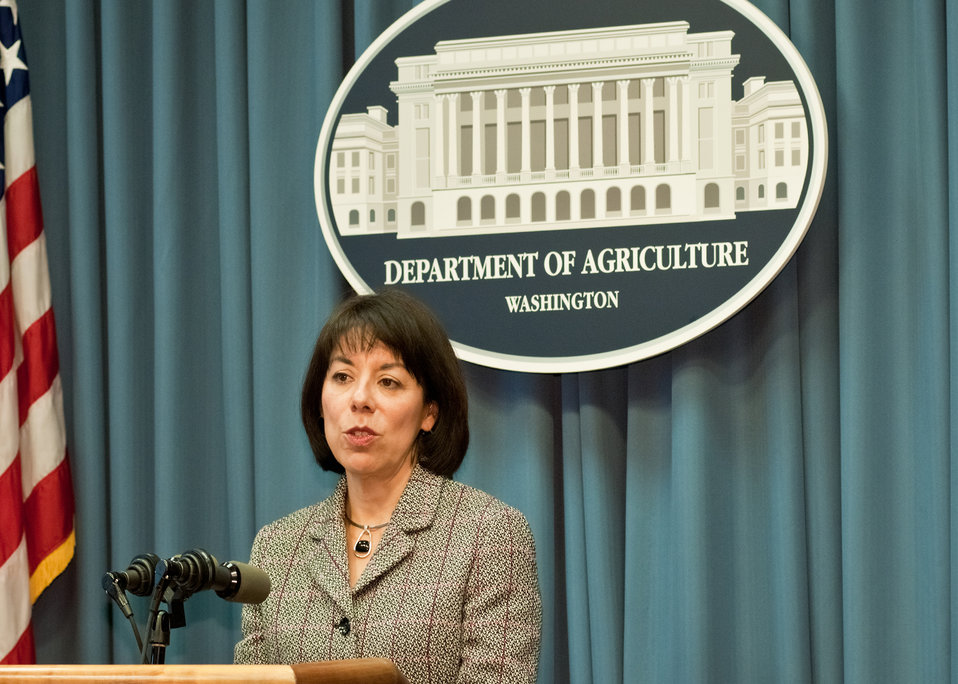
Sandra Serrano, Chancellor, Kern Community College District, Southern California sign a Memorandum of Understanding for the continuing partnership between the United States Department of Agriculture and the Hispanic Association of Colleges and Universities at the United States Department of Agriculture in Washington, DC, Friday, March 18, 2011. The Hispanic Association of Colleges and Universities (HACU) is a non-profit organization whose mission is to promote the success of Hispanics in higher education. In the United States, HACU represents more than 400 higher education institutions that together enroll two thirds of all Hispanics in higher education. This competitive USDA/HSI grant program is designed to promote and strengthen the ability of Hispanic Serving Institutions to carry out education programs that attract, retain, and graduate outstanding students capable of enhancing the nation's food and agricultural scientific and professional work force.